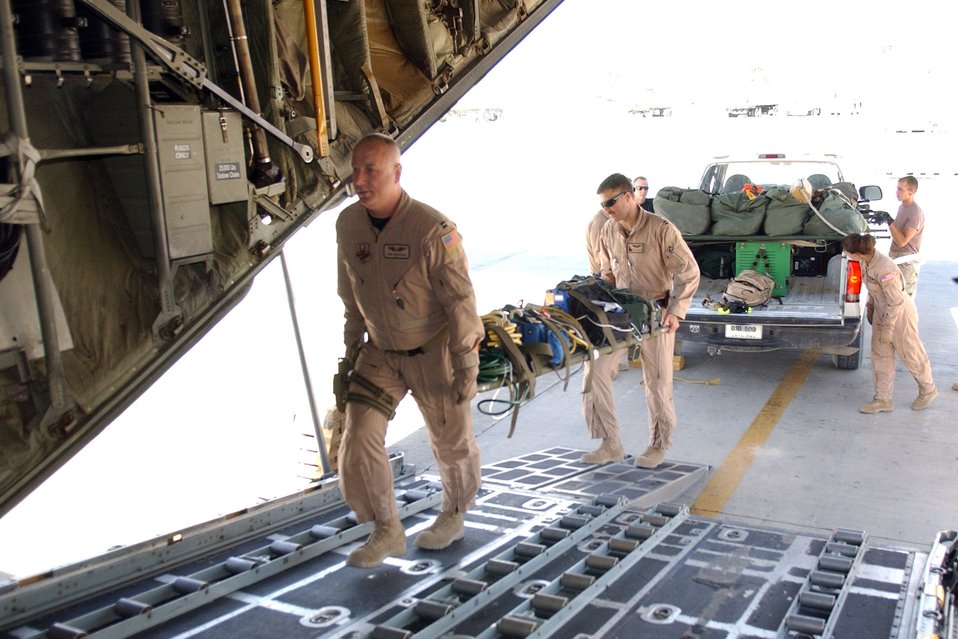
Total force team saves lives

BAGRAM AIR BASE, Afghanistan -- Capt. Troy Mefferd loads medical equipment in preparation for an aeromedical evacuation mission on a C-130 Hercules in support of Operation Enduring Freedom. Captain Mefferd is assigned to the 455th Expeditionary Aeromedical Squadron here and is deployed from the Idaho Air National Guard.